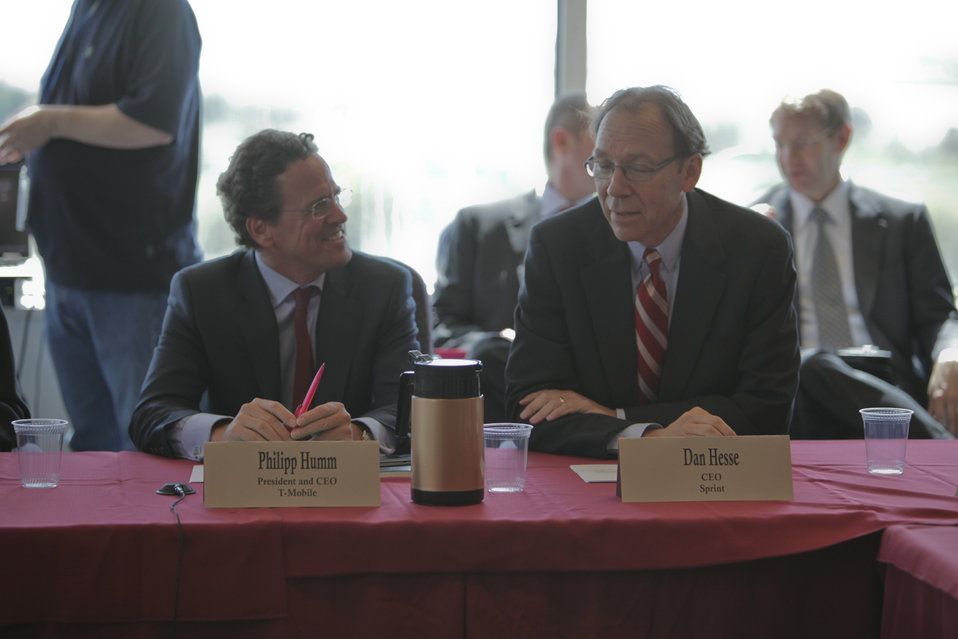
FCC Chairman Host Leaders From the Digital Education Ecosystem

President and CEO of T-Mobile, Philipp Humm and CEO of Sprint, Dan Hesse attends FCC Chairman's event at FCC's HQ in Washington, DC on March 29, 2012.